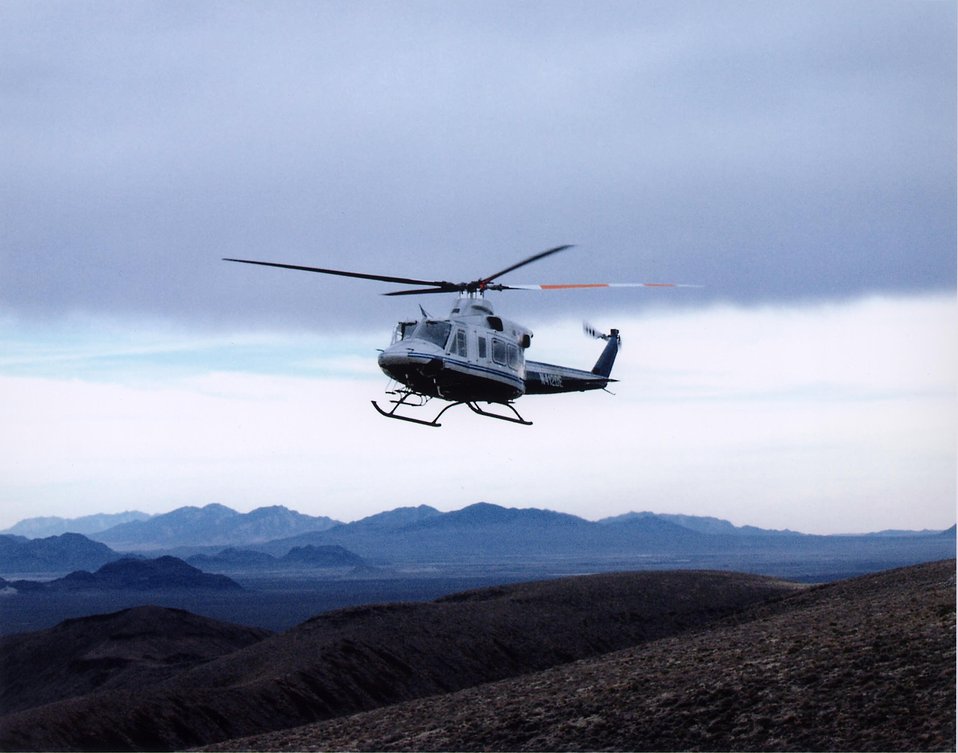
HELICOPTER CARRYING SECRETARY ABRAHAM ARRIVING AT THE YUCCA MOUNTAIN SITE.

YUCCA MOUNTAIN, ON THE SOUTHWEST BOUNDARY OF THE NEVADA TEST SITE, IS BEING EVALUATED FOR SUITABILITY AS THE NATION'S FIRST REPOSITORY FOR HIGH LEVEL NUCLEAR WASTE. STUDIES INCLUDE SURFACE BASED TESTING OF ROCK, SOIL SAMPLES AND WATER MOVEMENT, SUBSURFACE ROCK TESTING AT DEEP LEVELS AND LABORATORY ANALYSIS OF SAMPLES. CURRENTLY NUCLEAR WASTE IS STORED IN TEMPORARY SURFACE STORAGE FACILITIES IN 39 STATES.